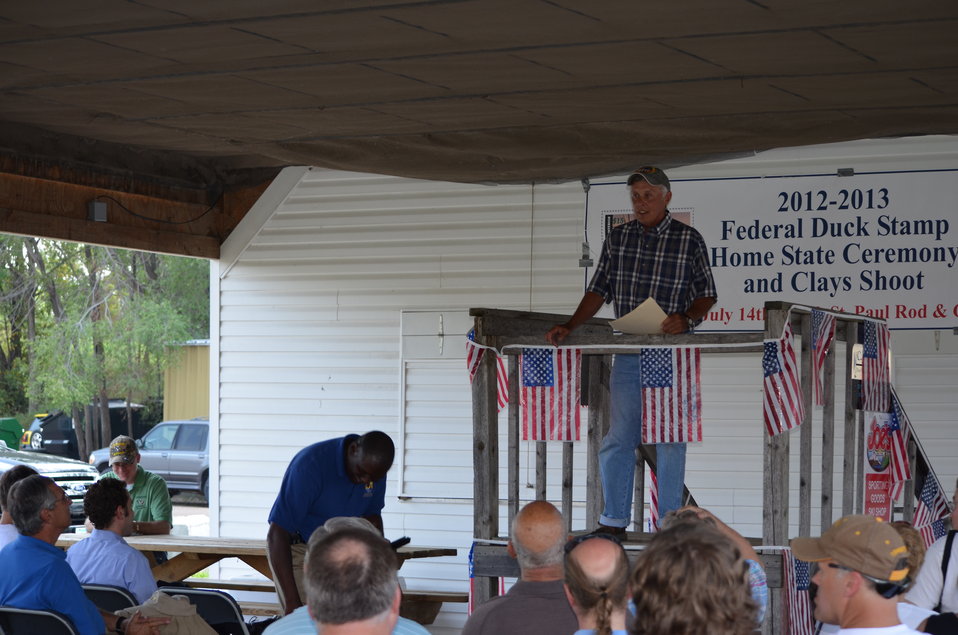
Event emcee Bill Hildebrand welcomes audience to 2012 Federal Duck Stamp Home State ceremony honoring wildlife artist and Duck Stamp winner Joe Hautman.